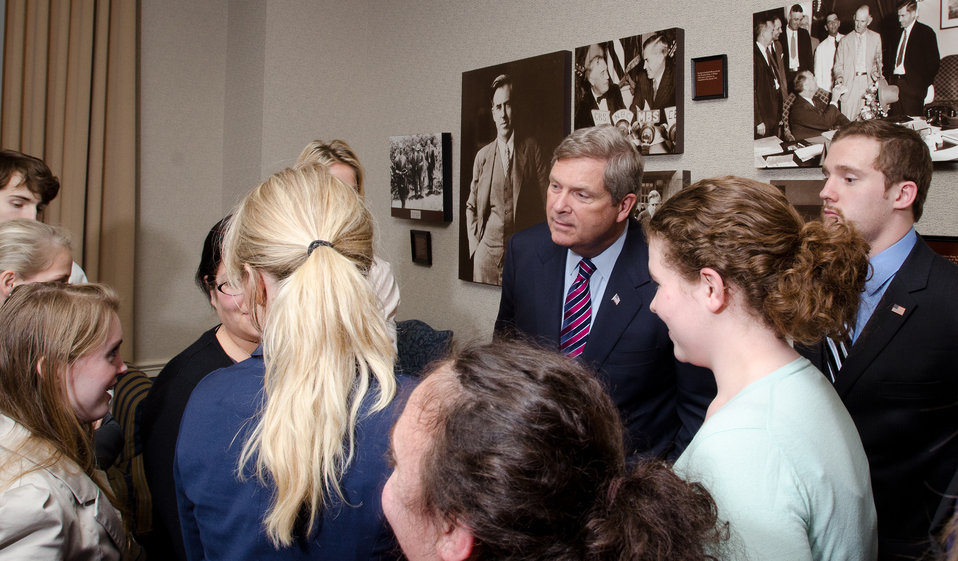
U.S. Department of Agriculture (USDA) Secretary Tom Vilsack (center) insured all the American University students who had questions were able to ask them. The students visited the USDA in Washington, DC, on Wednesday, March 23, 2011 to learn about Foreign Agriculture Service and the international role of the USDA.